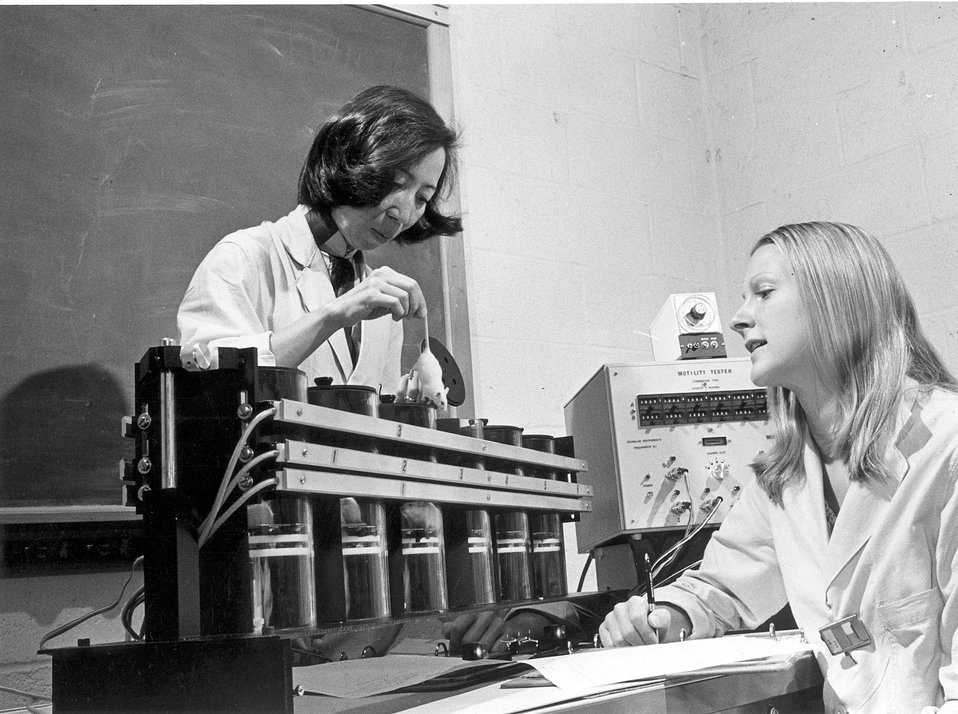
The automated optical activity meter is used to test the effects of drugs
being developed in connection with the treatment of Parkinsonism and allied
behavioral and motor disorders at Brookhaven National Laboratory.